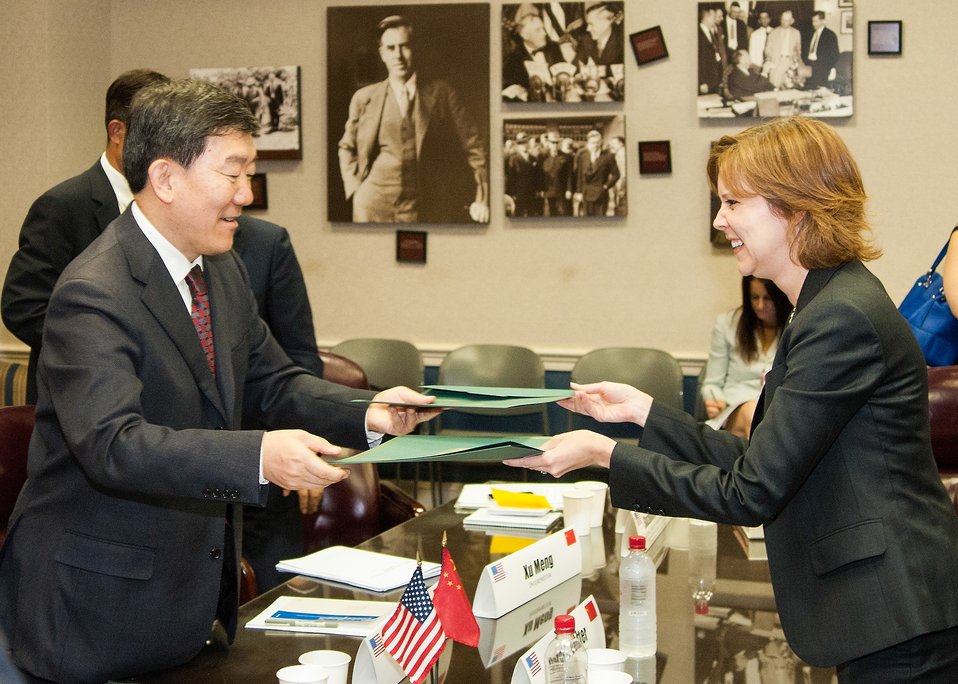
U.S. Department of Agriculture (USDA) Acting Under Secretary, Farm and Foreign Agricultural Services(FFAS) Darci Vetter (right), and Vice Minister, Minister of Agriculture, People’s Republic of China Niu Dun (left) exchange copies of the U.S. China Joint Committee on Cooperation in Agriculture (JCCA) at the USDA in Washington, D.C. on Tuesday, Jun. 9, 2013.